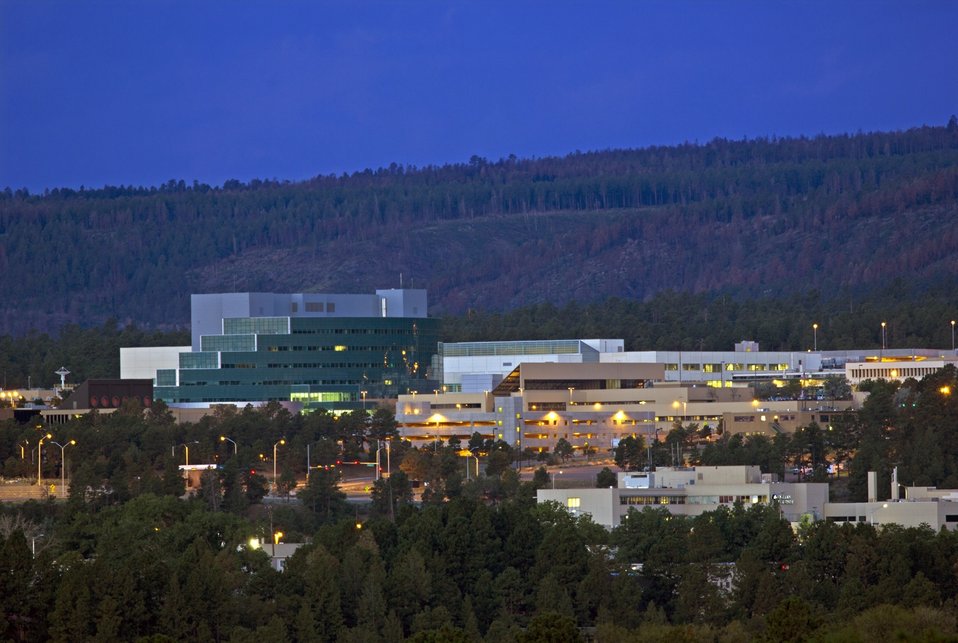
SHOWN IS THE TECHNICAL AREA 3 AT THE LOS ALAMOS NATIONAL LABORATORY.